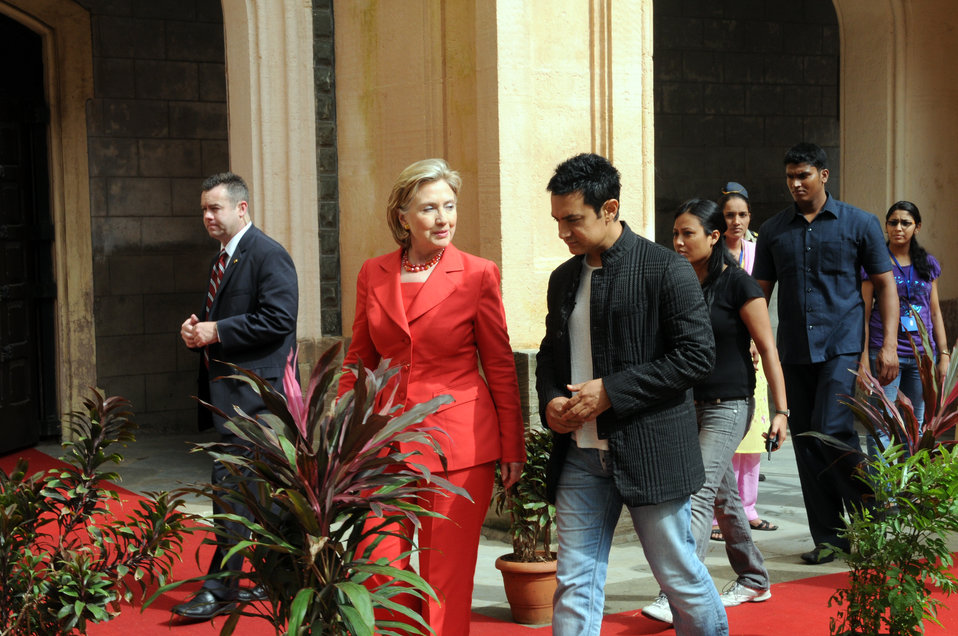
Secretary Clinton Visits St. Xavier College in Mumbai

U.S. Secretary of State Hillary Rodham Clinton and Aamir Khan discuss community service in Mumbai as they enter the auditorium at St. Xavier’s College, Mumbai, India July 18, 2009.